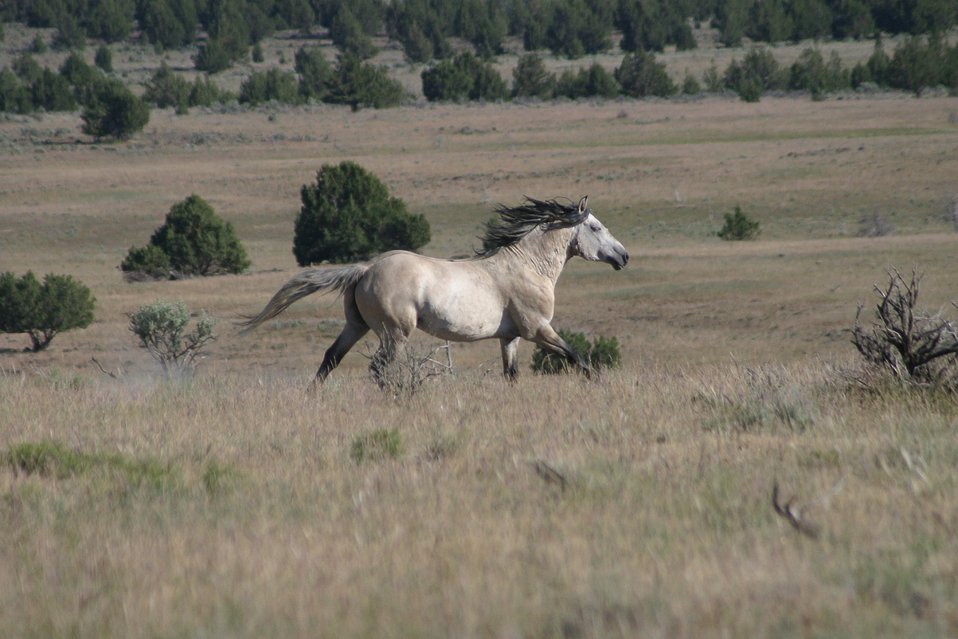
Wild Horse(s) in the Kiger Wild Horse Herd Management Area.